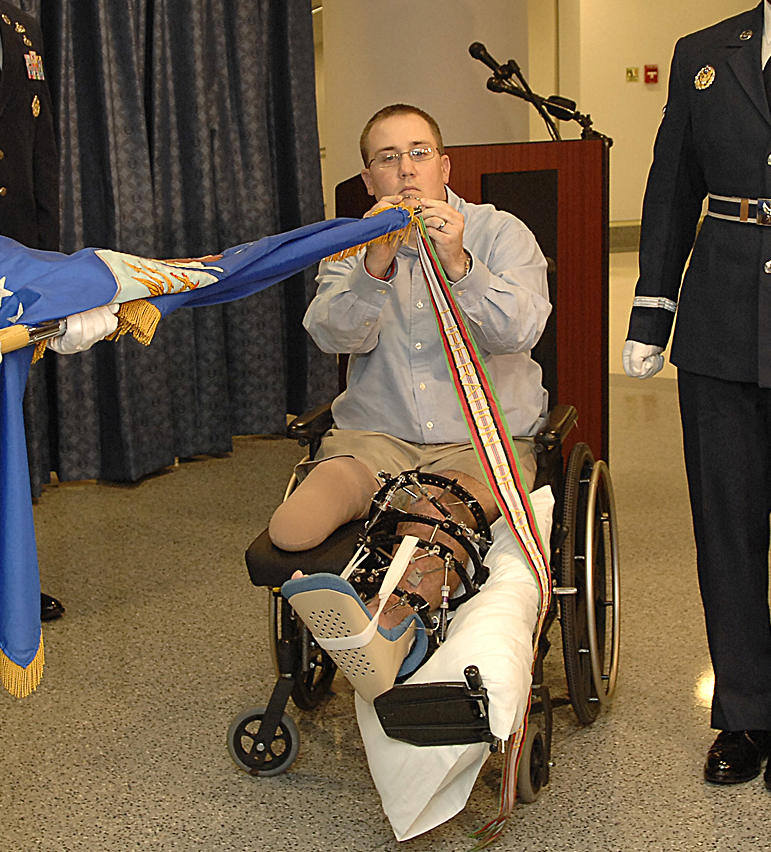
Dedication ceremony of the Airman's Hall

Staff Sgt. David W. Flowers attached the Afghanistan Campaign streamer to
the Air Force flag during the Airman's Hall dedication ceremony in the
Pentagon Sept. 17, 2009. Sergeant Flowers is an explosive ordnance disposal
journeyman who is recovering from injuries sustained during duty in
Afghanistan.